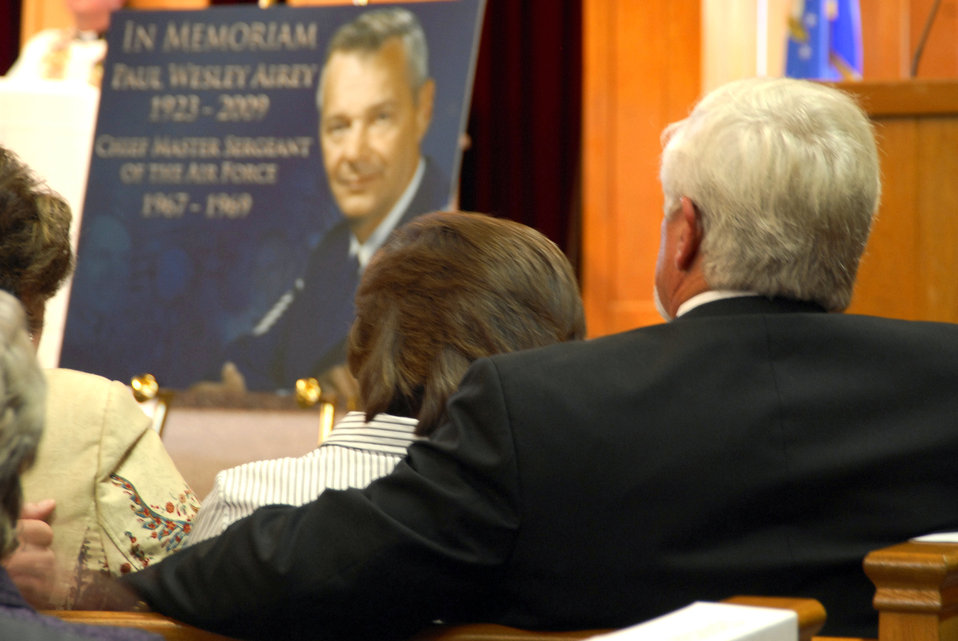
Airey memorial service celebrates life of AF hero

Retired Air Force Chief Master Sgt. Dale Airey, son of the first Chief Master Sgt. of the Air Force, Paul W. Airey, and his wife Norma look fondly at a memorial plaque created for their father's memorial service at Tyndall Air Force Base, Fla., March 16. Chief Paul W. Airey served for 27 years in the U.S. Air Force, retiring Aug. 1, 1970. He died March 11, 2009 in Panama City, Fla.